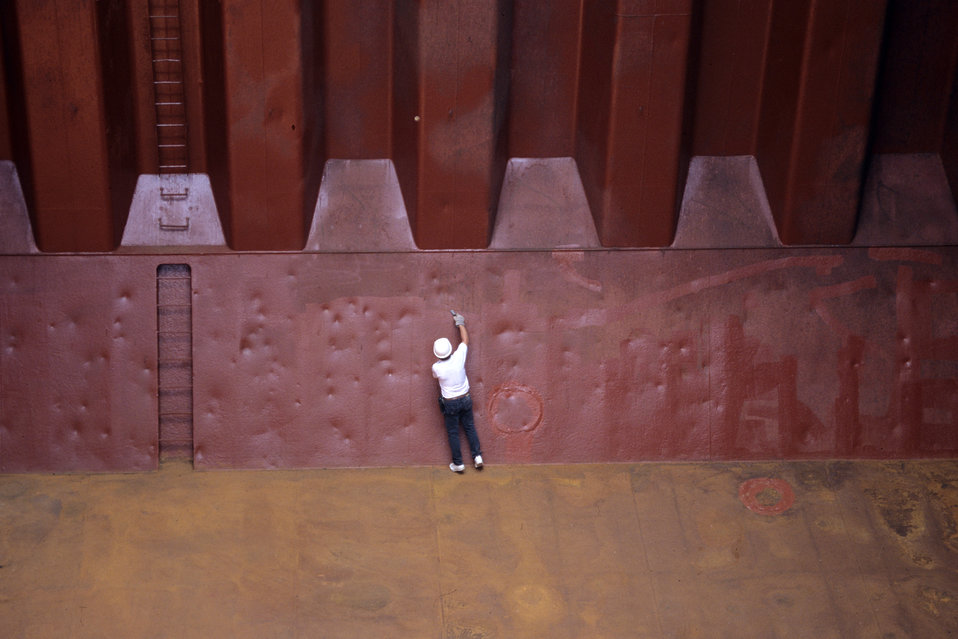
A U.S. Department of Agriculture (USDA) Grain Inspection, Packers and Stockyards Administration (GIPSA) Federal Grain Inspection and Weighing Services (FGIS) agent examines the side of the ship’s hold stowage for peeling paint prior to loading at the Bunge Grain Facility in Destrehan, LA on Sept. 1, 1996. USDA GIPSA offers inspection services for rice upon request on a fee basis for both domestic and export shipments. Rice inspection services are divided into two basic types: inspection for grade or factor analysis without grade. Inspection for grade involves analyzing the sample according to the quality factors listed in the Official U.S. Standards for Rice and certifying the applicable numeric grade designation, the quality factors responsible for the grade assignment, and any other quality factors the customer requests. Factor analysis involves the analysis of quality factors requested by the applicant for service without the certification of an applicable numeric grade designation. Factors requested by applicants might include free fatty acid, total oil and free fatty acid, stain as a count, broken in brown rice, false smut, and aflatoxin. Official inspections result in the issuance of an official certificate, which reports the grade of the rice. U.S. and international buyers rely on official USDA inspection certificates to provide accurate, official descriptions of the grade, class, and condition of the inspected rice. Official certificates are receivable by all offices and all courts of the United States as prima facie evidence of the truth of the statements stated thereon.